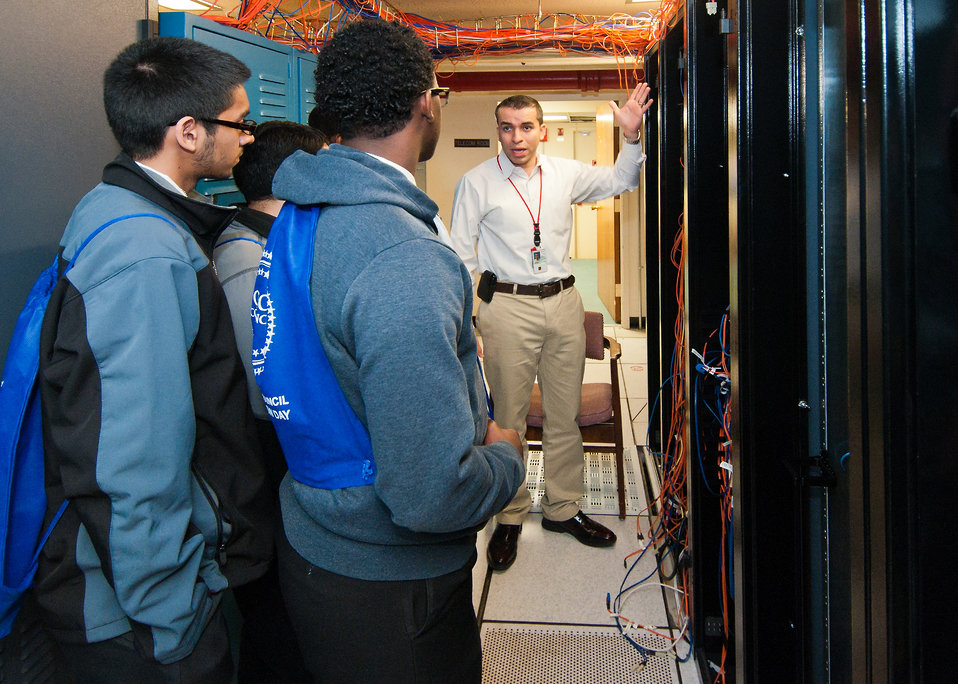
U. S. Department of Agriculture (USDA) Network Operations Center employee Nelson Flores explains the network architecture to students from Edison Academy in Fairfax, VA USDA Information Technology (IT) Job Shadow Day held by the USDA Office of the Chief Information Officer (OCIO) to introduce local high school students to careers in information technology in Washington, D.C. on Tuesday, Apr. 2, 2013.